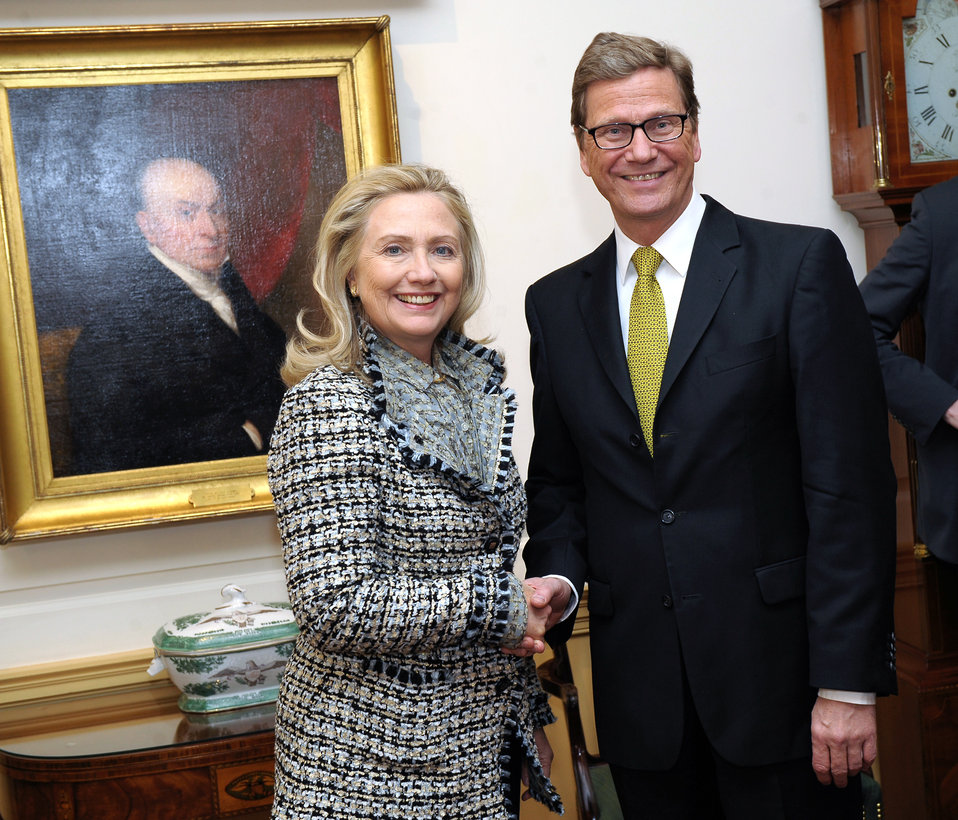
Secretary Clinton and German Foreign Minister Westerwelle Smile for a Photo

U.S. Secretary of State Hillary Rodham Clinton and German Foreign Minister Guido Westerwelle smile for a photo after their bilateral meeting at the U.S. Department of State in Washington, D.C., on January 20, 2012.